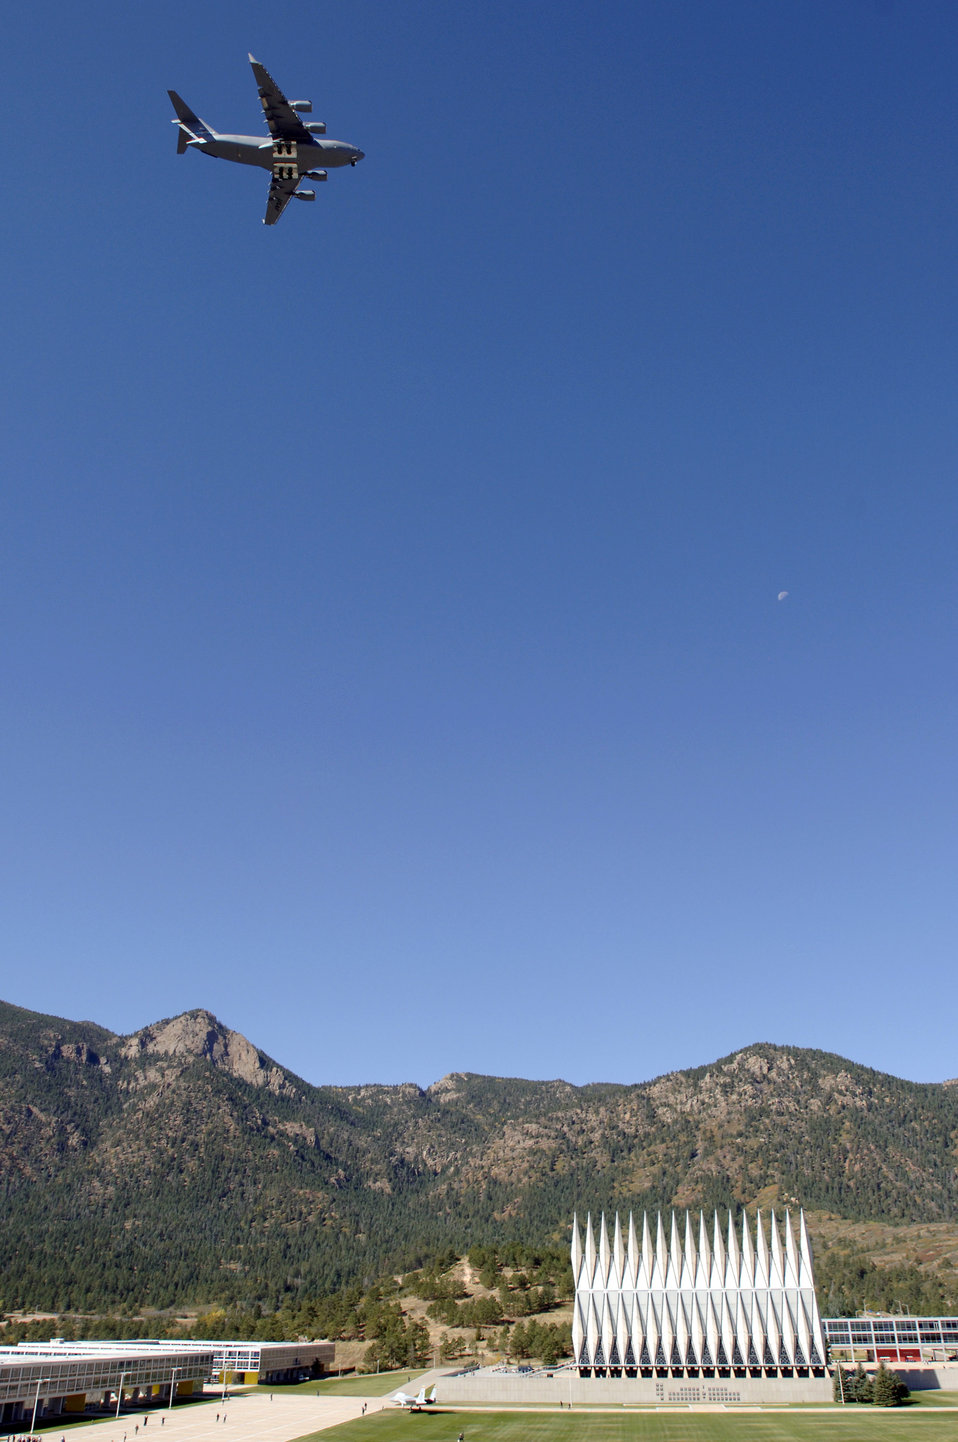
Commandant of Cadets flys new C-17 Globemaster III home

Brig. Gen. Susan Y. Desjardins flies a newly accepted C-17 Globemaster III Oct. 2 over the U.S. Air Force Academy cadet area in Colorado Springs, Colo. General Desjardins accepted the aircraft into the Air Force's inventory at Boeing's facilities in Long Beach, Calif., and flew it from the Boeing facility to its new duty station with the 436th Airlift Wing at Dover Air Force Base, Del. The general, a command pilot with more than 3,800 flying hours in the C-17 and other aircraft, is the Air Force Academy commandant of cadets.